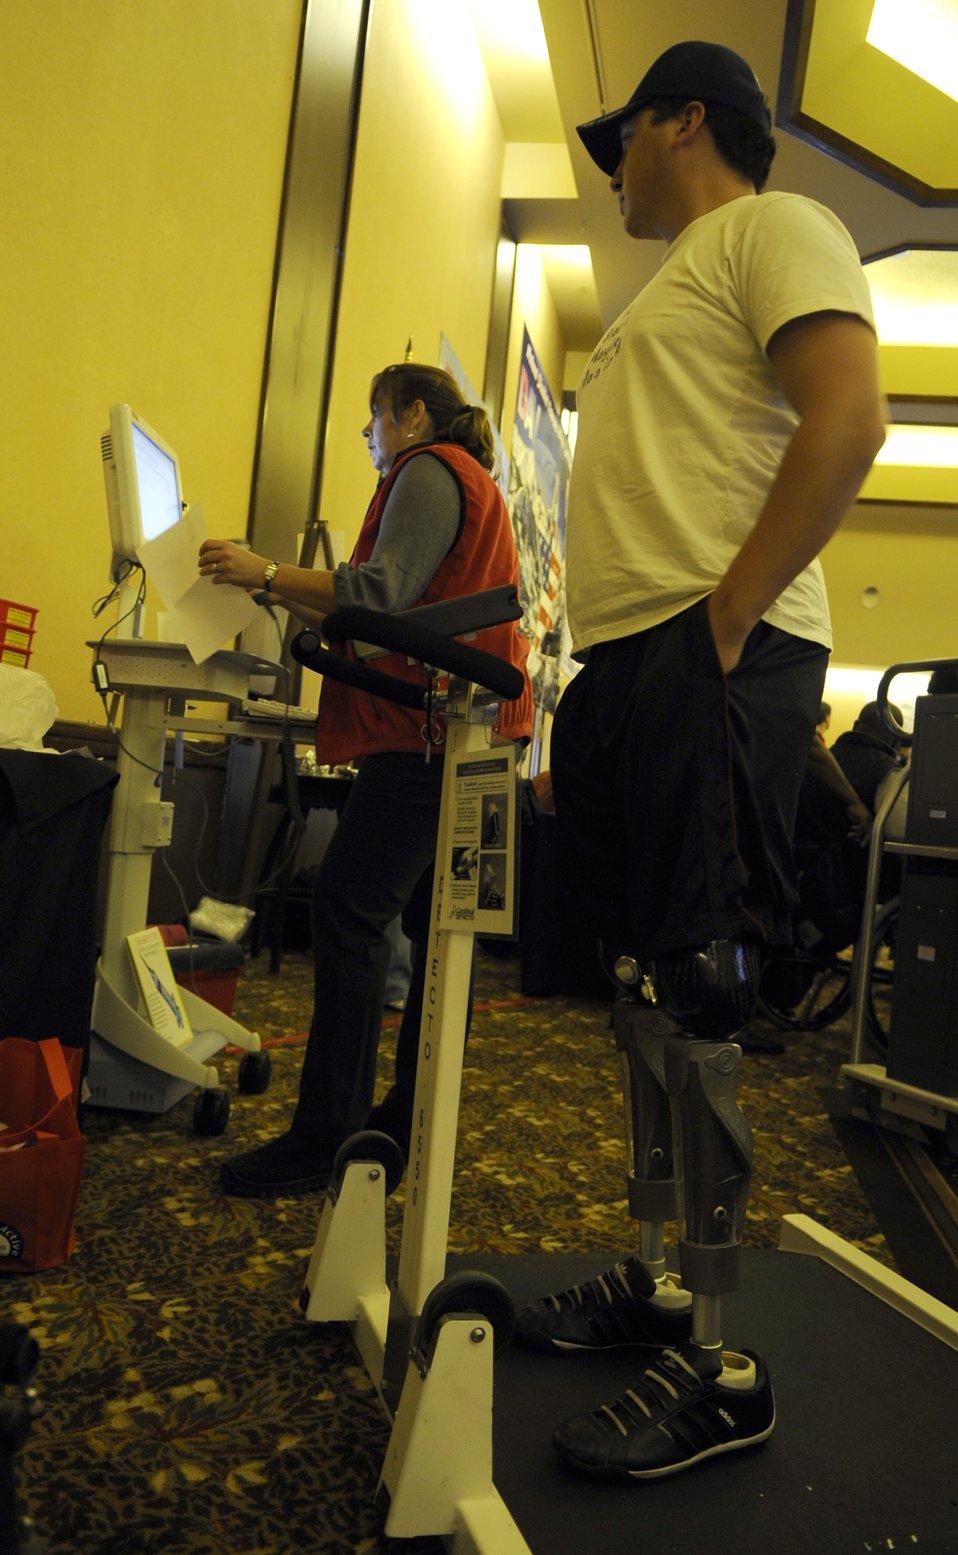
Winter rehabilitation clinic shows veterans potential

Senior Airman Kevin Krogh gets weighed inside The Silver Tree Hotel March 29 during registration for the 23rd National Disabled American Veterans Winter Sports Clinic in Snowmass Village, Colo. Airman Krogh lost both legs in a major car accident in 2007 and this will be his first year attending the sports clinic. Airman Krogh is assigned to Fort Sam Houston in San Antonio.